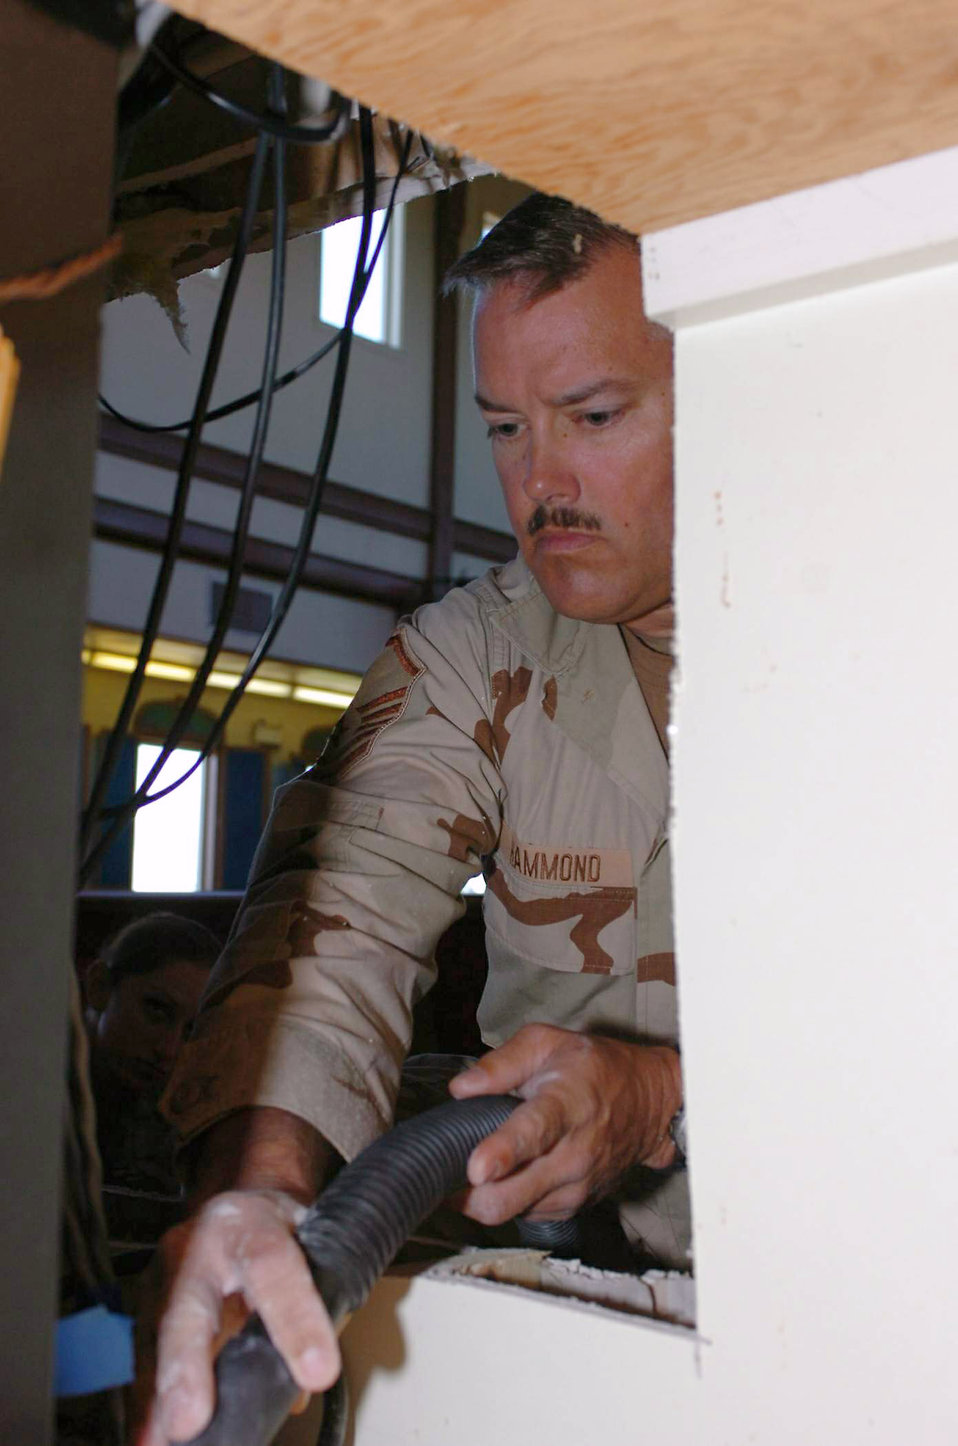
Finishing touches

Master Sgt. Stephen Hammond vacuums drywall and sawdust out of the sound booth in the Naval Station Guantanamo Bay's base chapel Jan. 17 at Guantanamo Bay, Cuba. Sergeant Hammond and his team completed more than 150 projects for both Joint Task Force Guantanamo and the Naval Station. JTF Guantanamo provides support to the Office of Military Commissions, to law enforcement and to war crimes investigations. Sergeant Hammond is the shop manager for Joint Task Force Guantanamo's 474th Expeditionary Civil Engineering Squadron structures team.